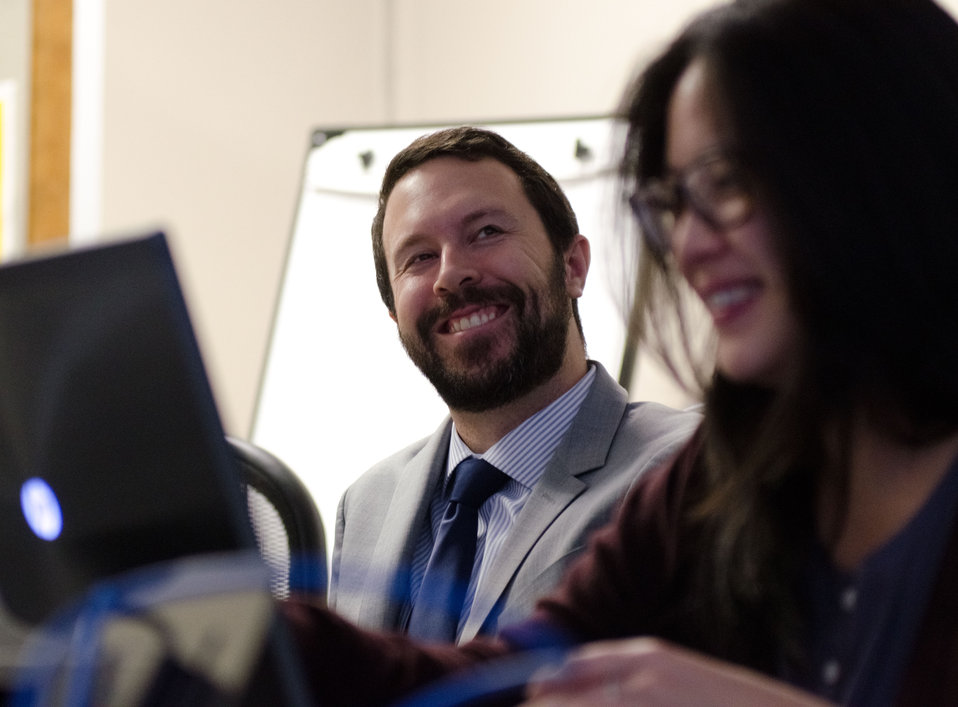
U.S. Department of Agriculture (USDA) Forest Service Media Relations Officer U.S. Department of Agriculture (USDA) Forest Service Media Relations Officer Lawrence Chambers (left), studies a large screen display of questions sent during the Virtual Office Hours Twitter session hosted by Robert Bonnie, Senior Advisor to the Secretary for Environment and Climate Change (not seen), while Deputy Press Secretary Stephanie Chan (right), locates a useful USDA web link to respond to the person who sent a question to the Agriculture headquarters, in Washington, D.C. on Thursday, November 29, 2012. Online questions about U.S. Department of Agriculture's (USDA) record on conservation achievements and efforts to reconnect Americans to the great outdoors were answered during the event. Questions were submitted live and in advance to the @USDA Twitter account using the hashtag #AskUSDA.